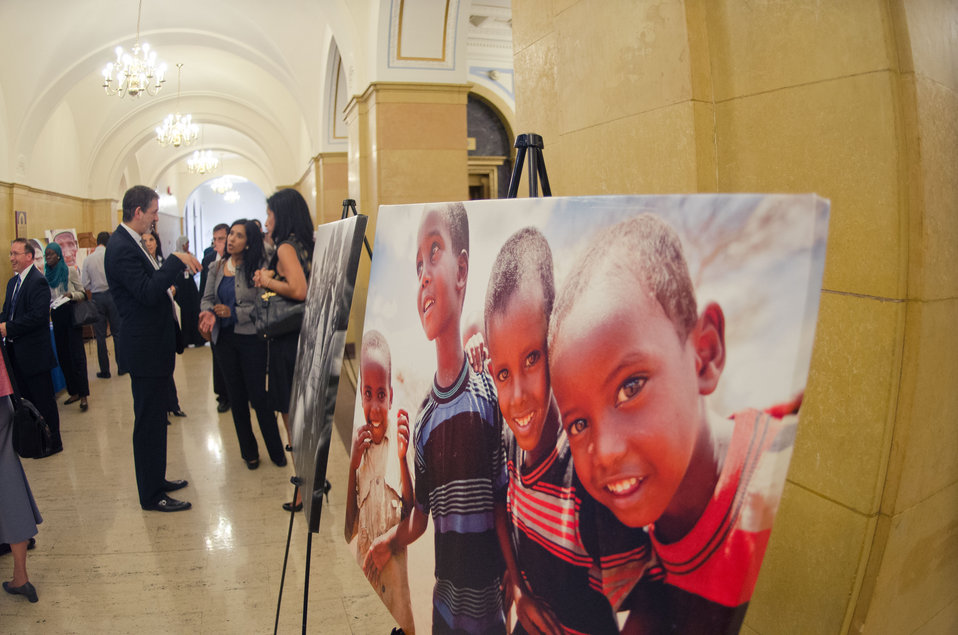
Iftar celebration, co-sponsored by the U.S. Department of Agriculture, U.S. Agency for International Development (USAID) and Islamic Relief USA, on Tuesday, August 7, 2012, in the USDA Whitten Building, in Washington, D.C. Ramadan is the month of fasting, intensive prayer, sacrifice and worship for Muslims around the world. Throughout this month, Muslims fast during the day, abstaining from consuming food from dawn to dusk and using this time to purify spiritually. Fasting reminds Muslims of the poverty and hunger suffered by many in the United States and worldwide. It is a connection with those who are hungry not through devotion, but through the many global factors that lead to hunger and famine. Iftar is the meal at which Muslims break their fast at sunset, usually by eating dates, according to the Prophetic tradition.